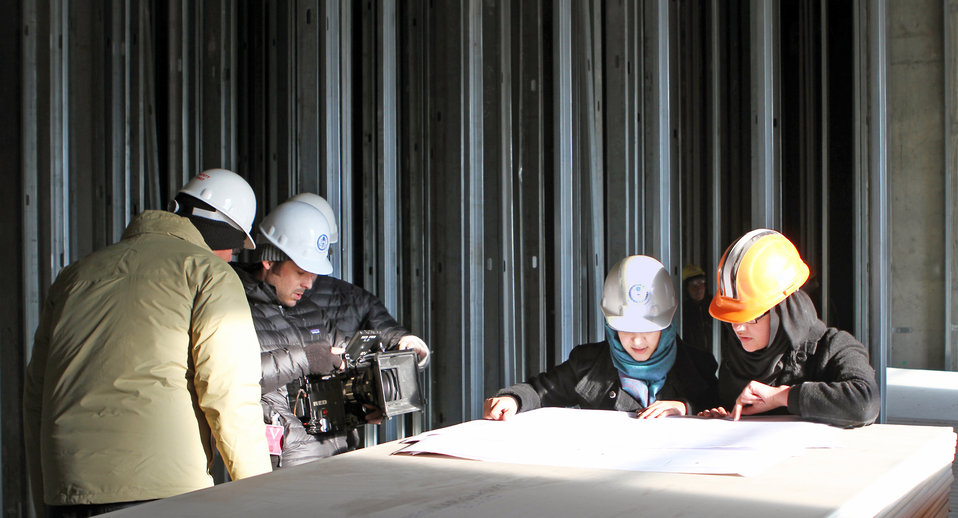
Hollywood film crew shoots recent graduates from USAID’s Female Engineering Internship program for upcoming videos